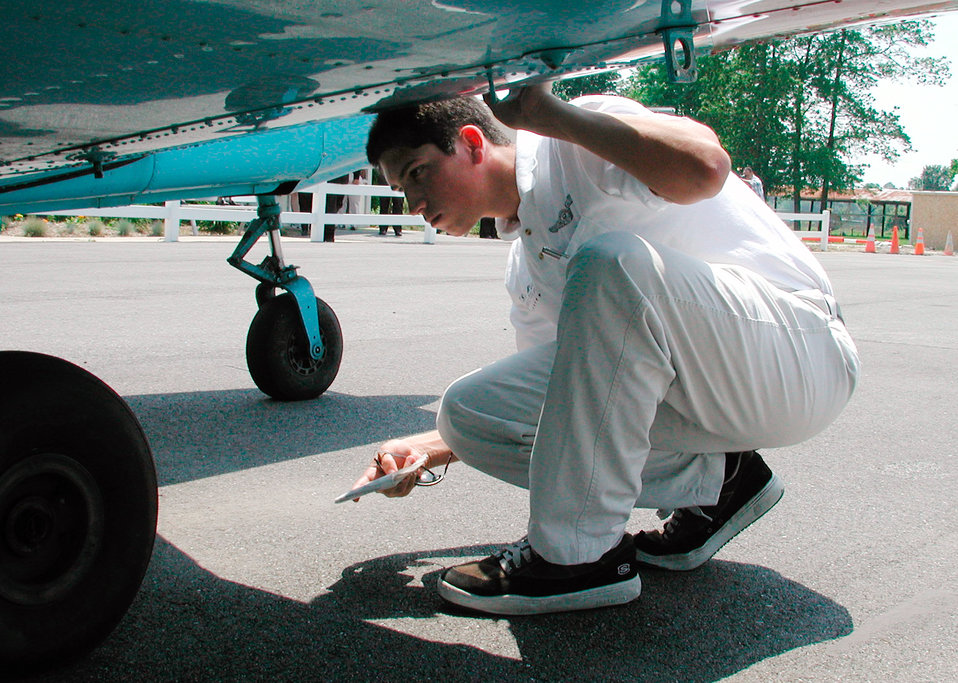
Preflight check

DOVER AIR FORCE BASE, Del. -- Manuel R. Ochoa inspects a Piper Warrior during Flight Awareness Summer Training here recently. He is an Air Force ROTC cadet from New Mexico State University.